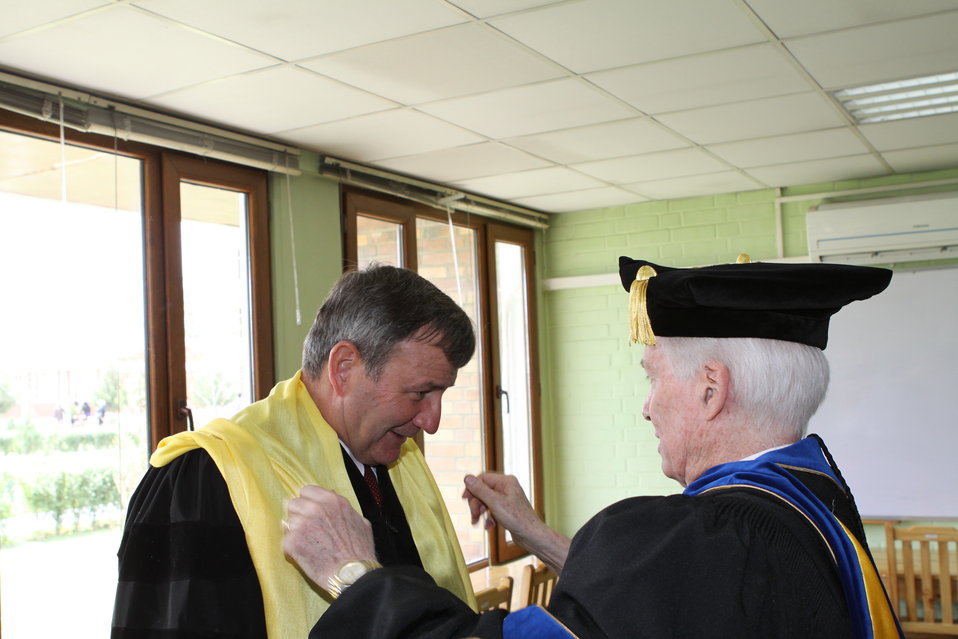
100526 AUAF Graduation 050